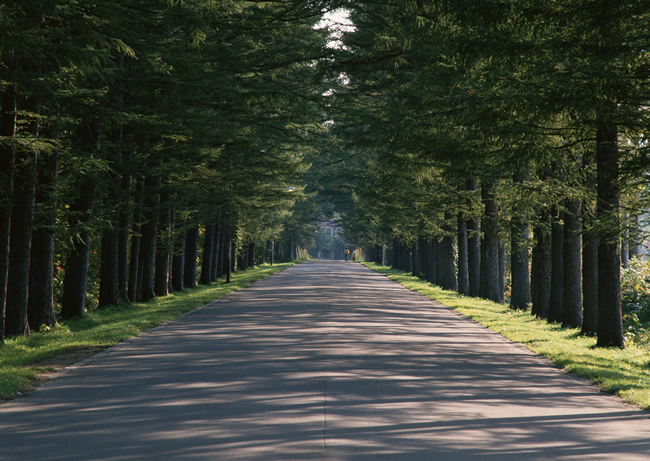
Uploaded by request of BAI Yang

Taken in a small village in HeNan Province of CHINA

The photo was taken in my hometown.